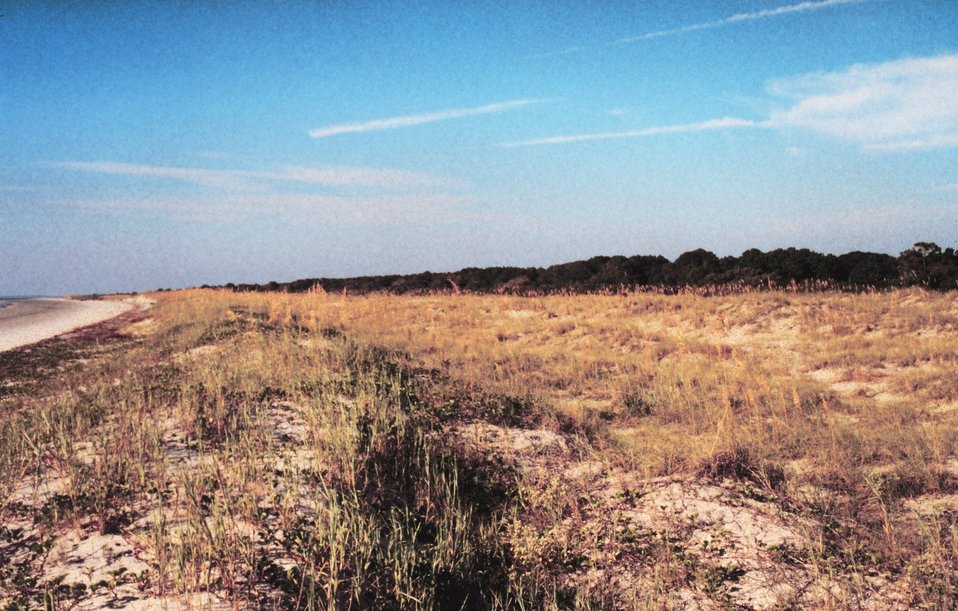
Primary dunes.